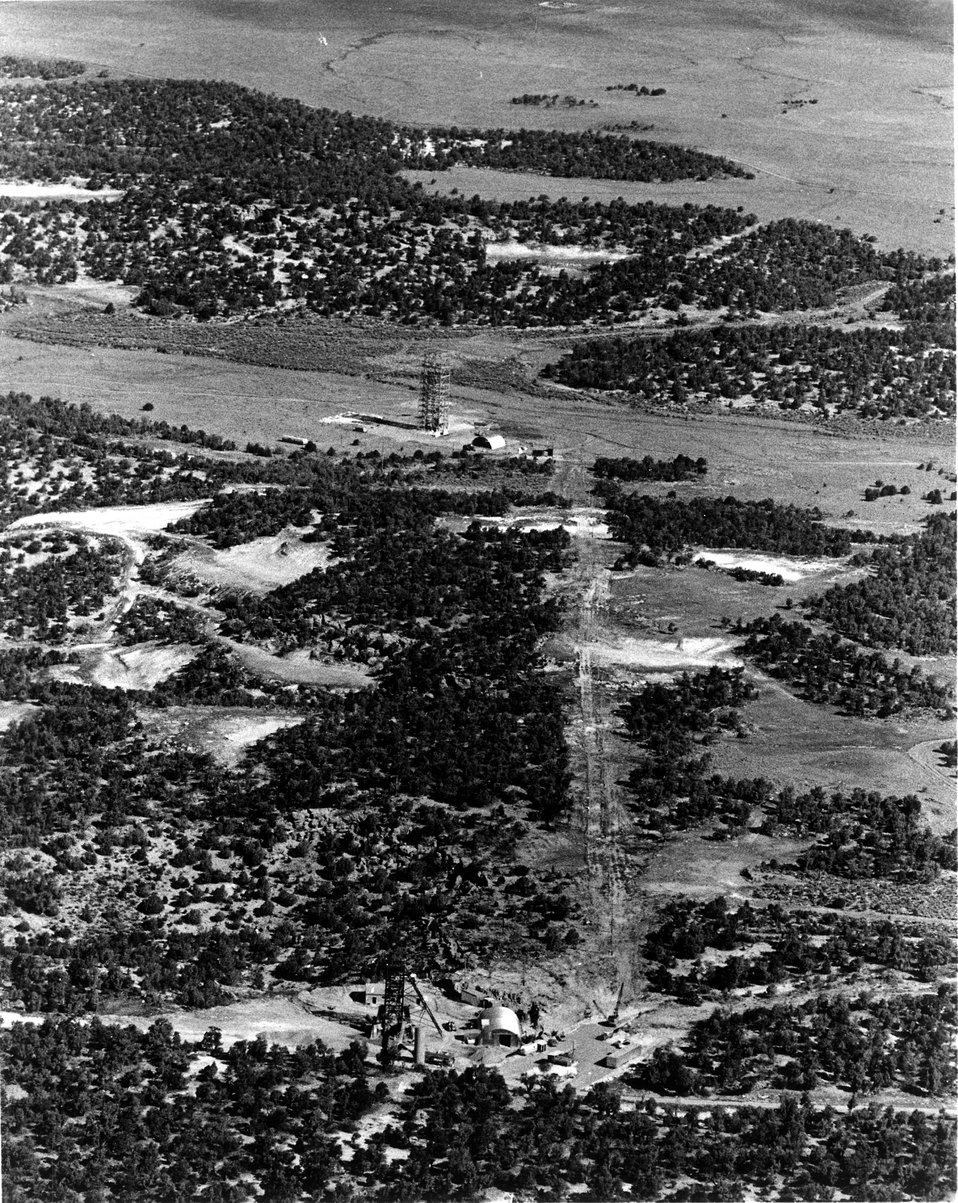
A deeply buried uranium ore body was under preparation for mining by Rio Algom Corporation of Toronto, Canada, in Lisbon Valley area near Moab, Utah, during 1969. c. 1970